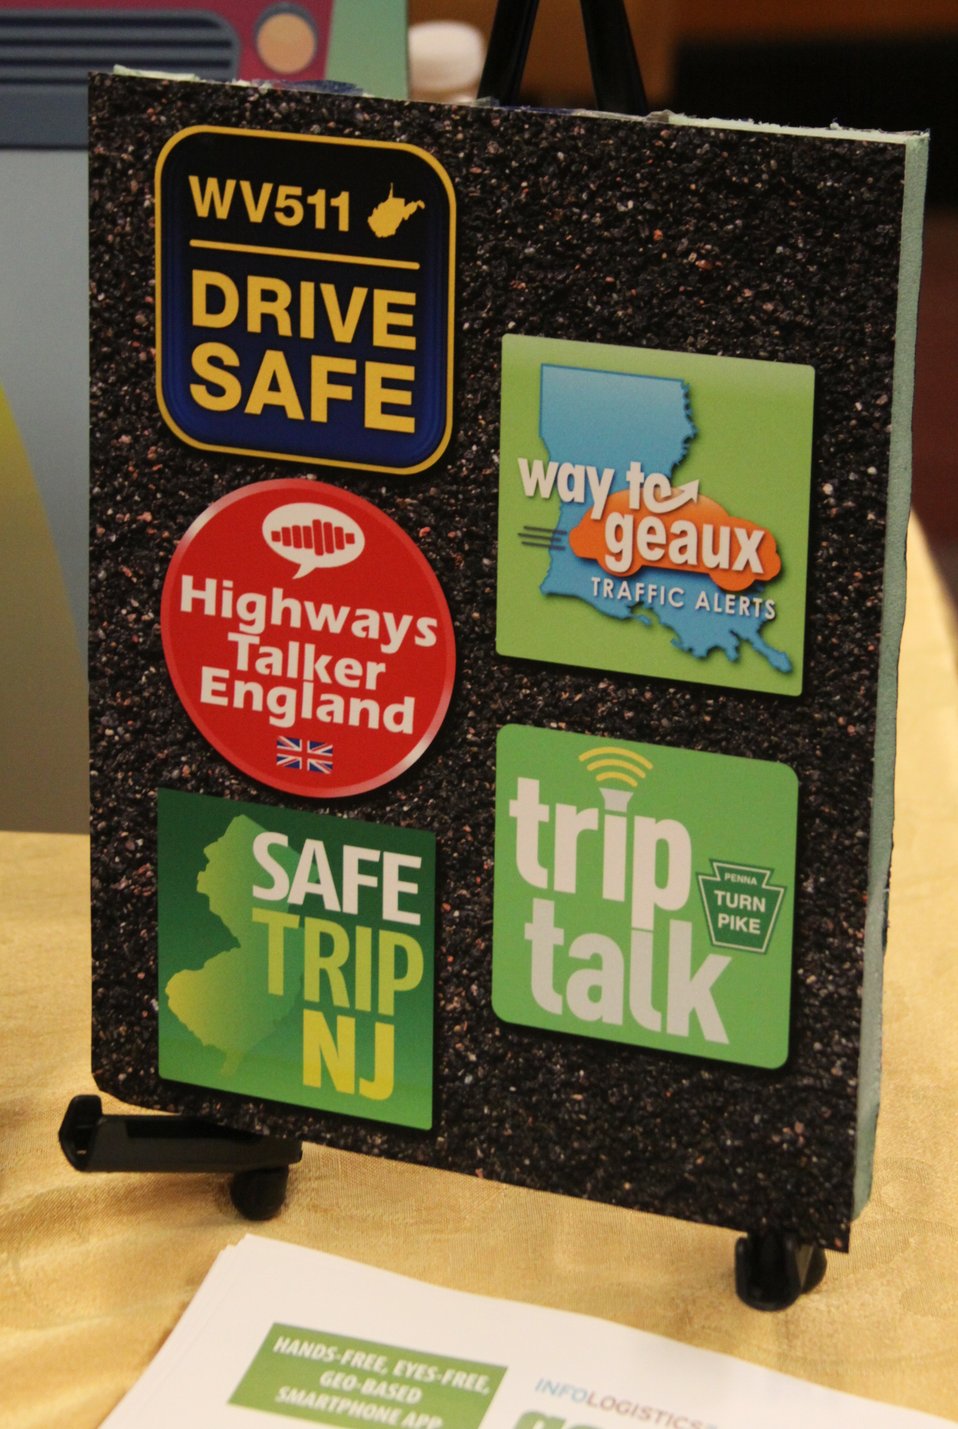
Distracted Driving Technology Showcase April 19, 2013